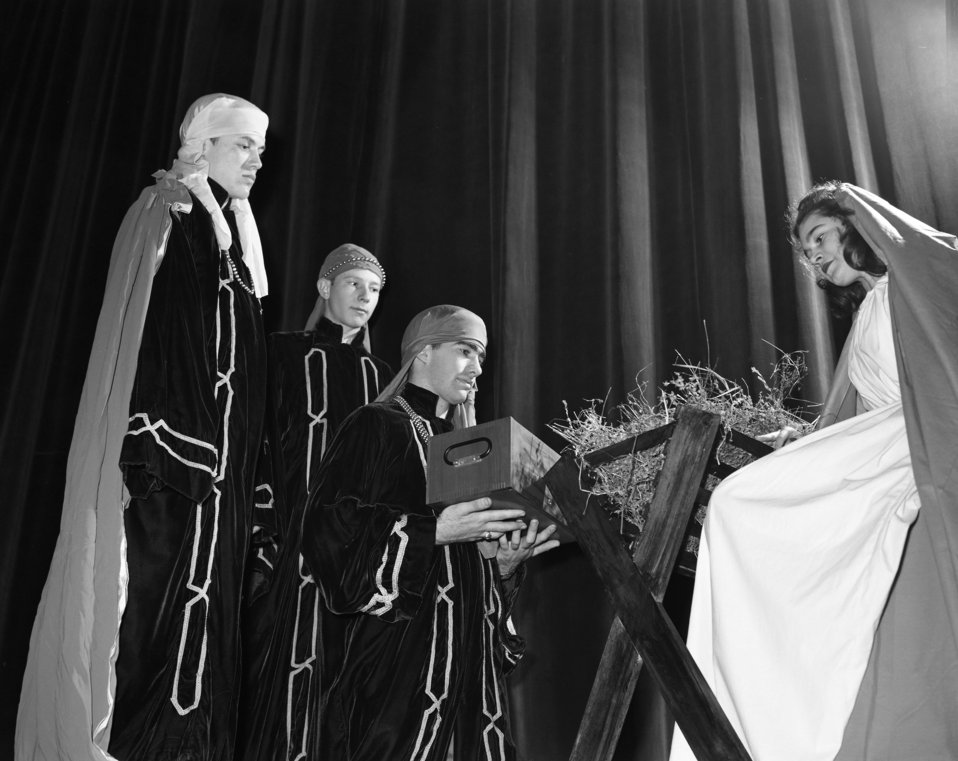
High School Christmas Play Oak Ridge 1947

4063-2 DOE photo Ed Westcott 12-5-1947 Oak Ridge Tennseess